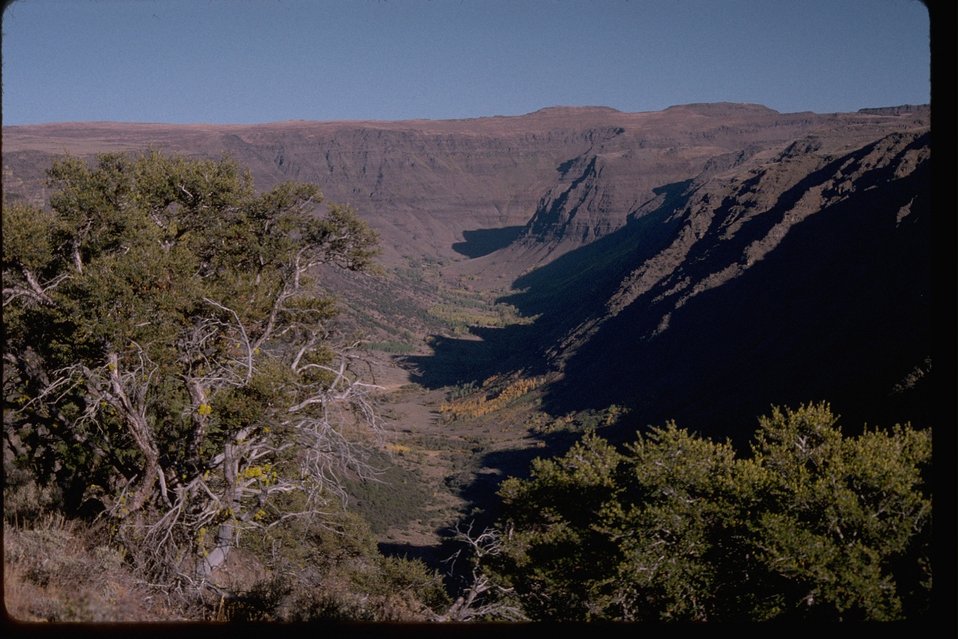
Big Indian Gorge during Fall from an overlook at Rooster Comb.